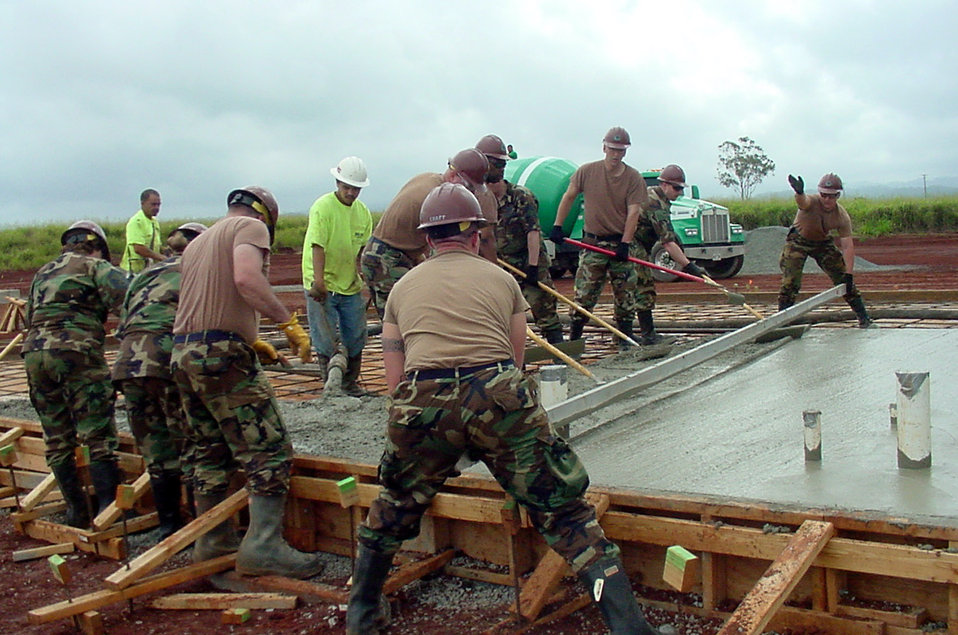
Civil engineers assist in humanitarian mission

Reservists assigned to the 440th Civil Engineer Squadron work on a concrete pad for a camp facility at Helemano Plantation in Hawaii. The humanitarian deployment involved construction of an adult daycare center for senior citizens and people with disabilities. The reservists are assigned to the 440th Airlift Wing based at General Mitchell Air Reserve Station in Milwaukee.